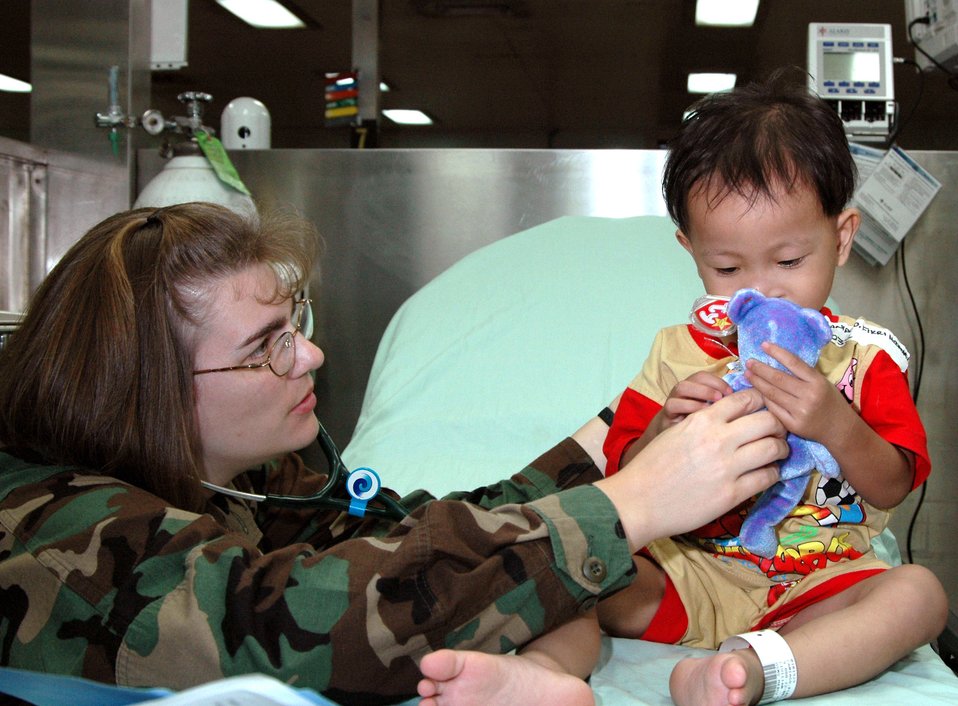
Aboard the USNS Mercy

Maj. Gretchen Black presents a gift to a patient aboard the U.S. Navy hospital ship USNS Mercy while at a stop in Nias Island, Indonesia, on July 17. The Mercy is conducting humanitarian assistance in Southeast Asia and the Pacific Islands. Major Black is one of several Air Force medical professionals on the ship.